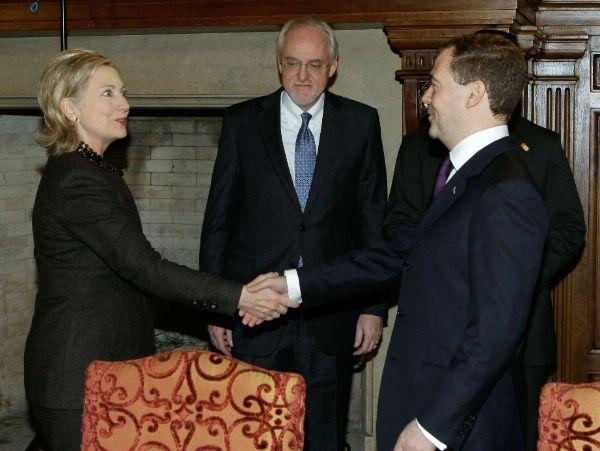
Secretary Clinton With Russian President Dmitry Medvedev

Russian President Dmitry Medvedev shakes hands with U.S. Secretary of State Hillary Rodham Clinton during a meeting at the Barvikha residence outside Moscow, March 19, 2010.